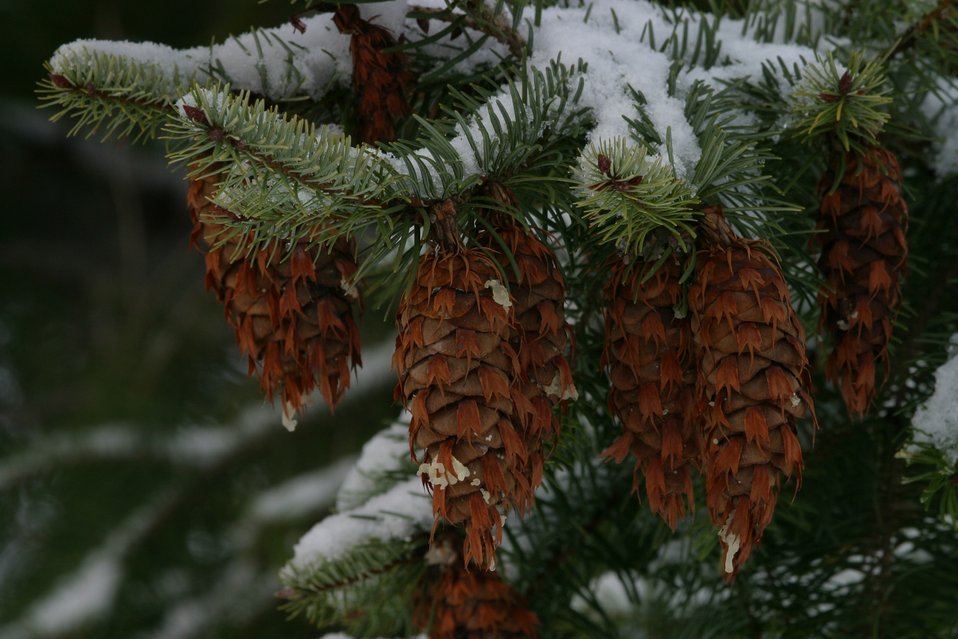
Snow and ice on Douglas Fir Bows and cones during the storm of January 2004.